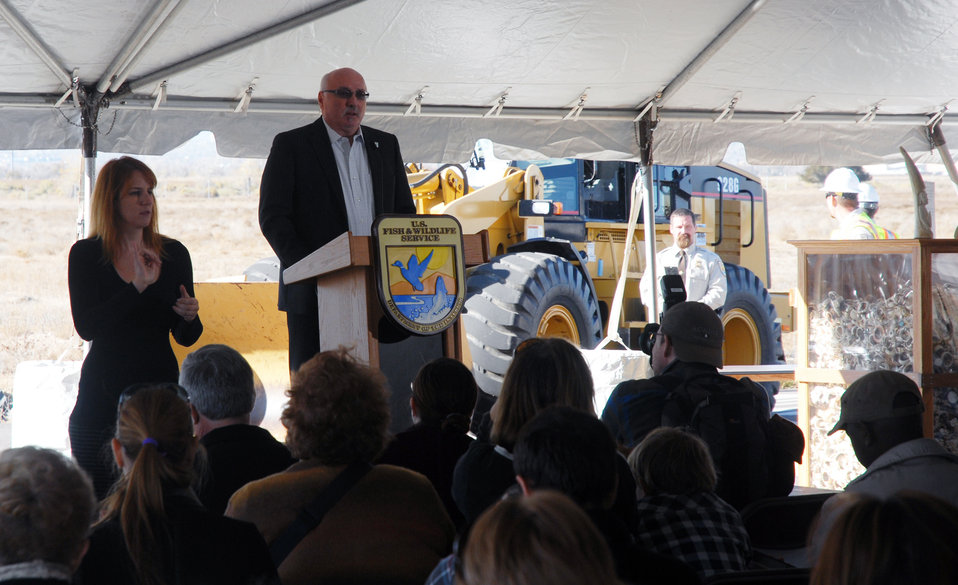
Azzedine Downes, President and CEO of the International Fund for Animal Welfare, speaks at the U.S. Ivory Crush.